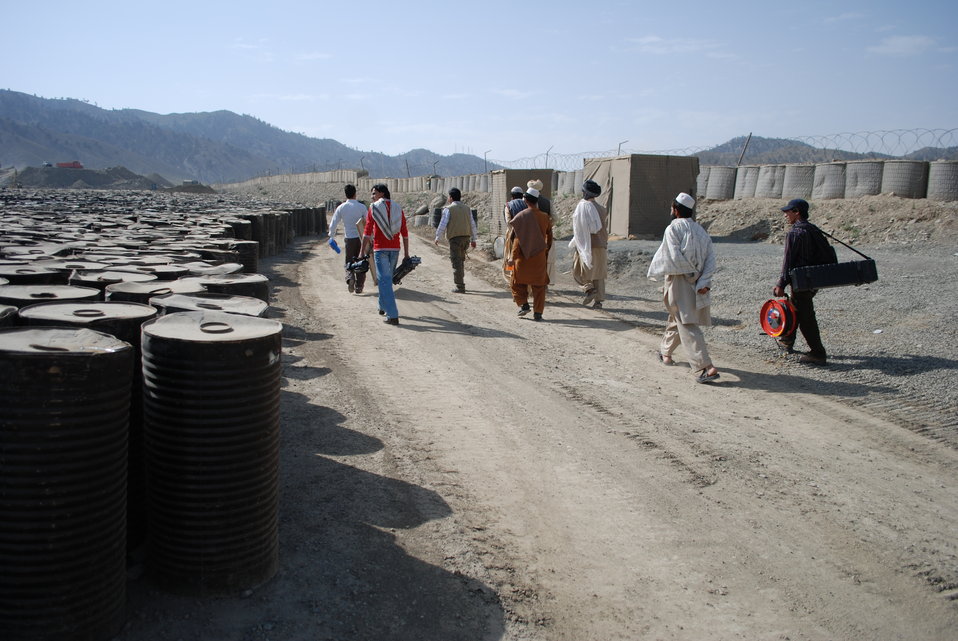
'On the Road' in Paktya Province